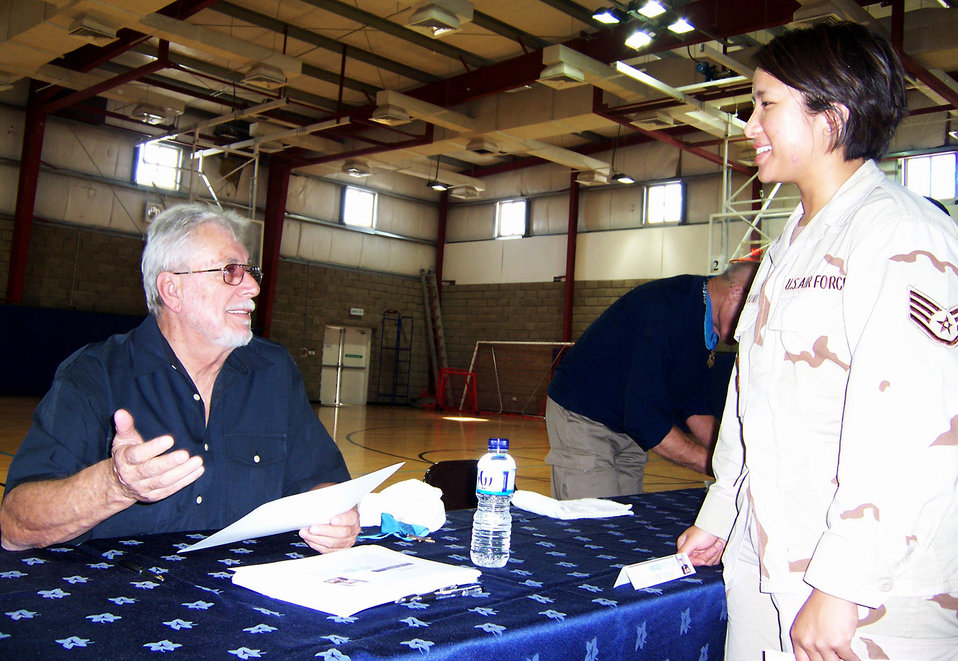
Medal of Honor recipients share stories of inspiration

Staff Sgt. Shafinah Rosauro, 379th Expeditionary Contracting Squadron, chats with Medal of Honor recipient Marine Capt. John McGinty III during an assembly Nov. 3 at a base in Southwest Asia.